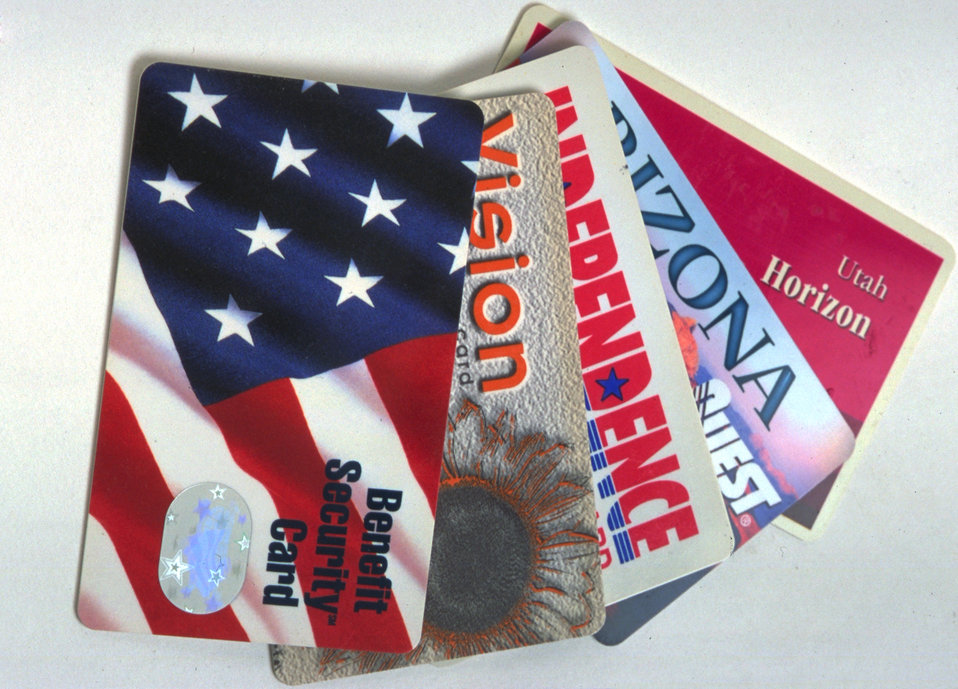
The Electronic Benefit Transfer card (EBT) replaces food stamps in 2000. EBT is an electronic system that allows a recipient to authorize transfer of their government benefits from a Federal account to a retailer account to pay for products received. EBT is used in all 50 States, the District of Columbia, Puerto Rico, the Virgin Islands, and Guam. State food stamp agencies work with contractors to procure their own EBT systems for delivery of Food Stamp and other state-administered benefit programs.